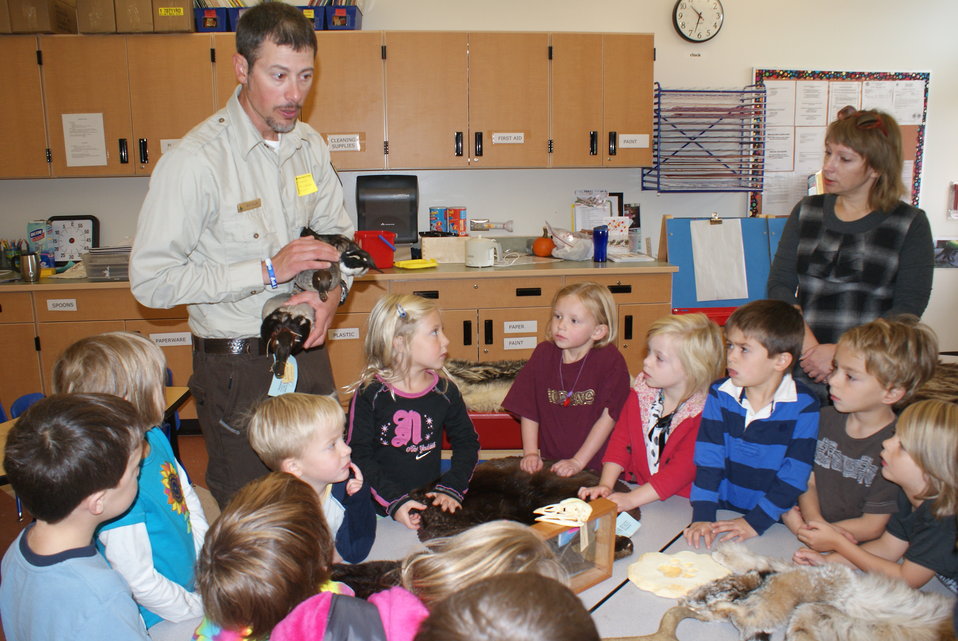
Scientists in the Community Program

U.S. Fish and Wildlife Service Mountain-Prairie Region Deputy ARD for External Affairs, Matt Kales, introduces early childhood education students at William Roberts Elementary School in Denver to some of Colorado's native and historic wildlife species.